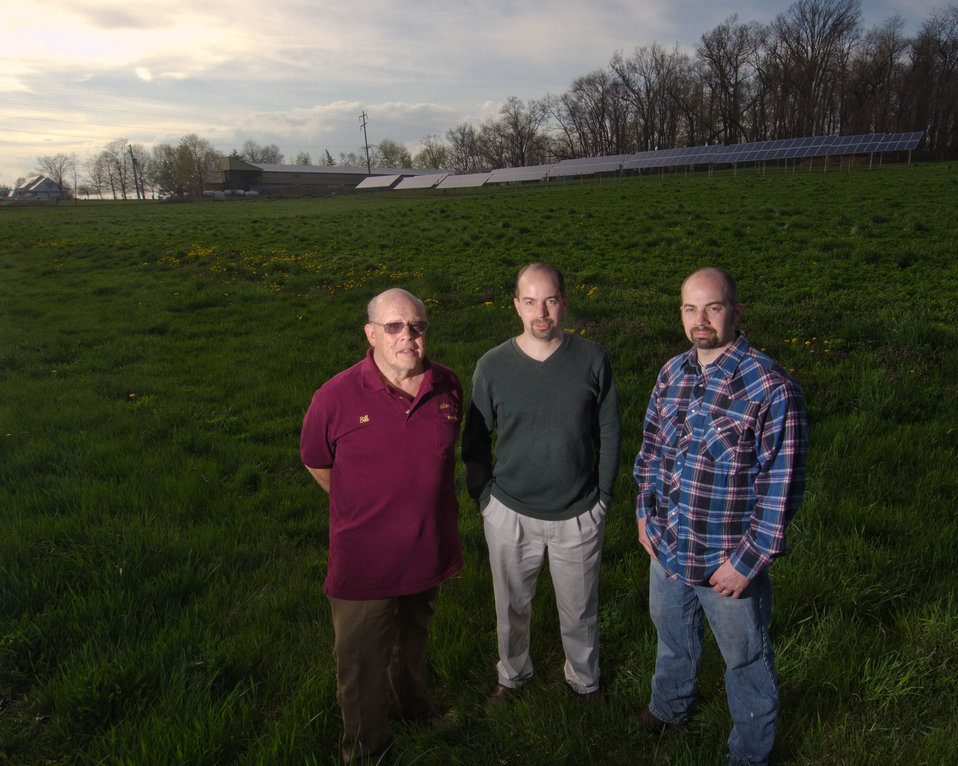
Jason Buck (r), along with his father William L. (l) and brother William Buck own and operate Seldom Rest Farms located, north of Myerstown, PA, on Wednesday, April 20, 2011. The farm raises a crops, sheep and 17,000 hens. The hens are kept in a two story chicken house and produce approximately 2.5 million chicks each year. To supplement their electrical needs, they chose a contractor who knew about United States Department of Agriculture (USDA) Rural Energy for America program (REAP) grants and helped them through the application process. The farm was awarded a $152,000 grant (25% of the cost). to install the 1001kW solar array to power their farm, a neighboring farm and homes on the local electrical grid. The 240 solar panels were ground mounted with 5-foot clearance underneath to allow sheep to graze and rest underneath protected from the rain, sun or snowfall. Ten inverters change the DC electrical energy from the panels into AC energy that goes into the local power grid. Spring statistics show it is producing more than expected. REAP offers grants and/or loan guarantees for the purchase and installation of renewable energy generating systems and for energy efficiency improvements.